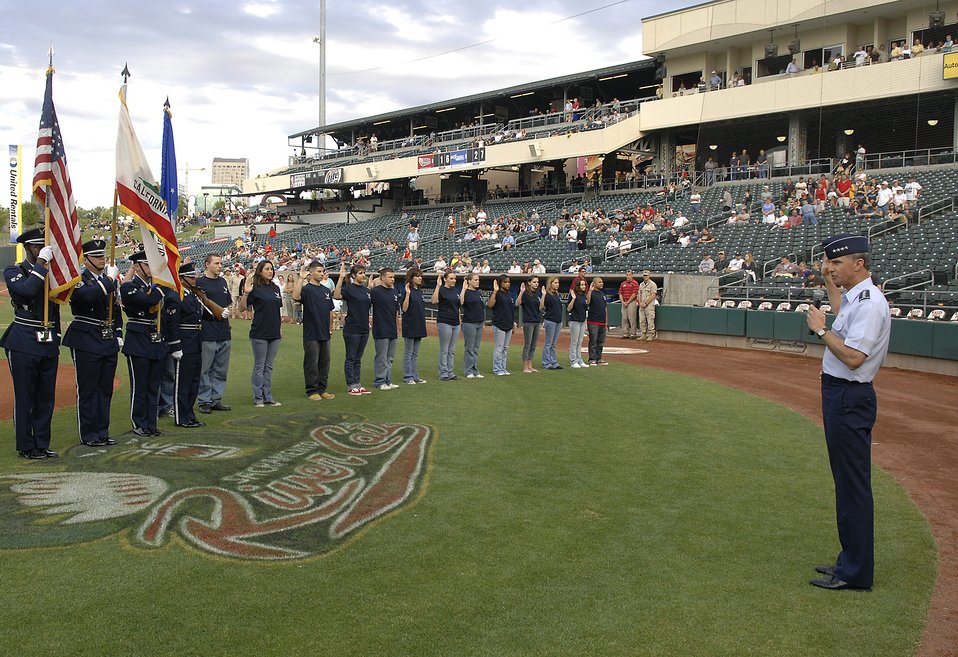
Sacramento Rivercats host Air Force Week event

Gen. Kevin P. Chilton enlists several teenagers into the delayed enlistment program before a local minor league baseball game June 4 during Air Force Week in California. The purpose of Air Force Week is to inform and educate the American public about the importance and roles of the Air Force in America's national defense. General Chilton is the commander of the Air Force Space Command at Peterson Air Force Base, Colo.